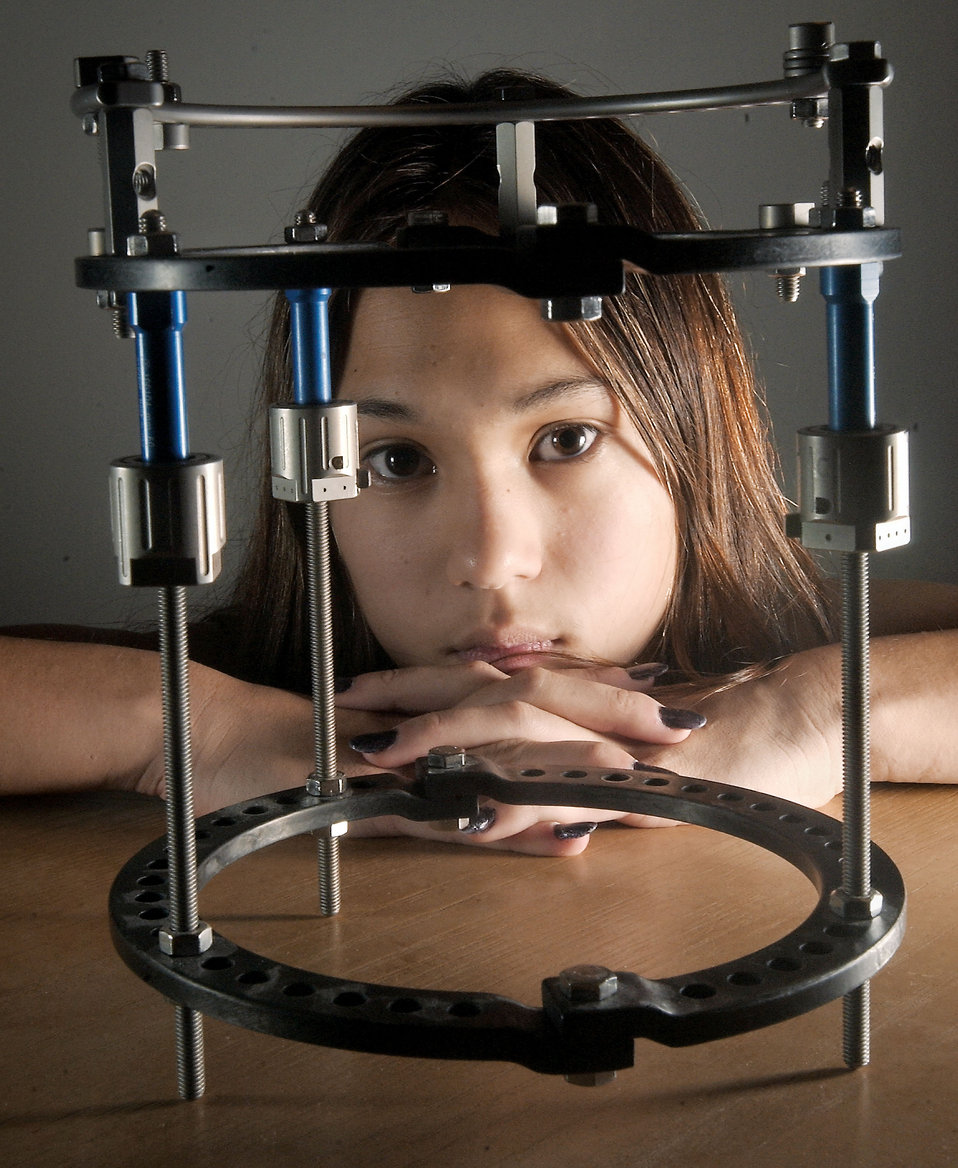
Gutsy girl

MCCHORD AIR FORCE BASE -- Jeannine Johnson, daughter of Tech. Sgt. Bill Johnson, had early health problems causing her right leg to stop growing. When she was 5, doctors started to lengthen the bones in her leg. They used the Illizorov technique, involving the appararus in front of her, that eventually helped her leg bones to grow. Now 13, she lives life in the fast lane through drag racing.